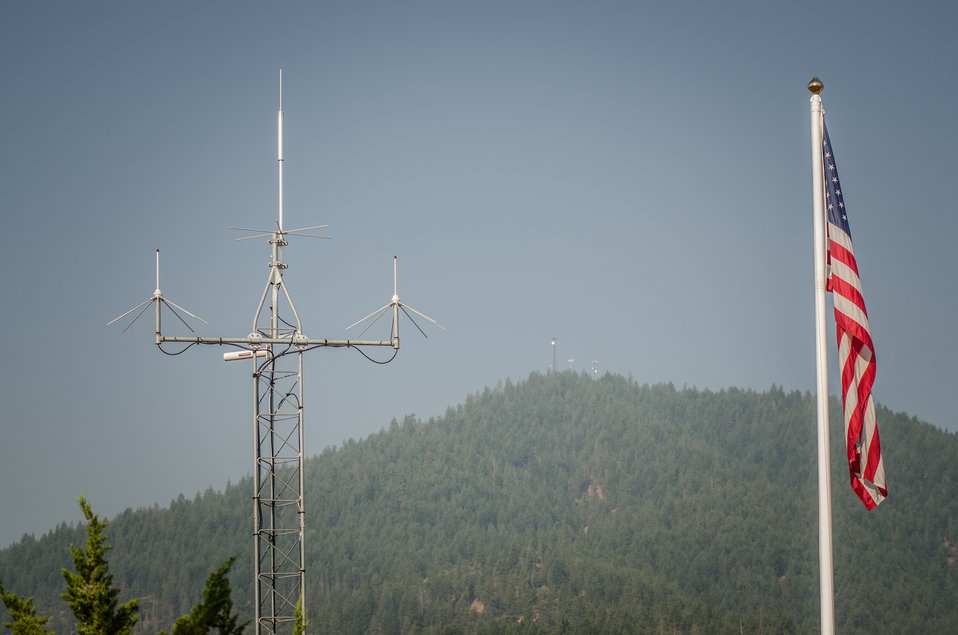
Communications antennas transmit and receive signals the Salmon/Scott Ranger Station, of the Klamath National Forest, site of the Salmon River Complex Wildlands Fire, northwest of Sawyers Bar and west of Etna and Yreka, CA, on Wednesday, Aug. 6, 2013. Radio units utilize high points, hilltops and at times aircraft to relay signals to crews in remote locations.